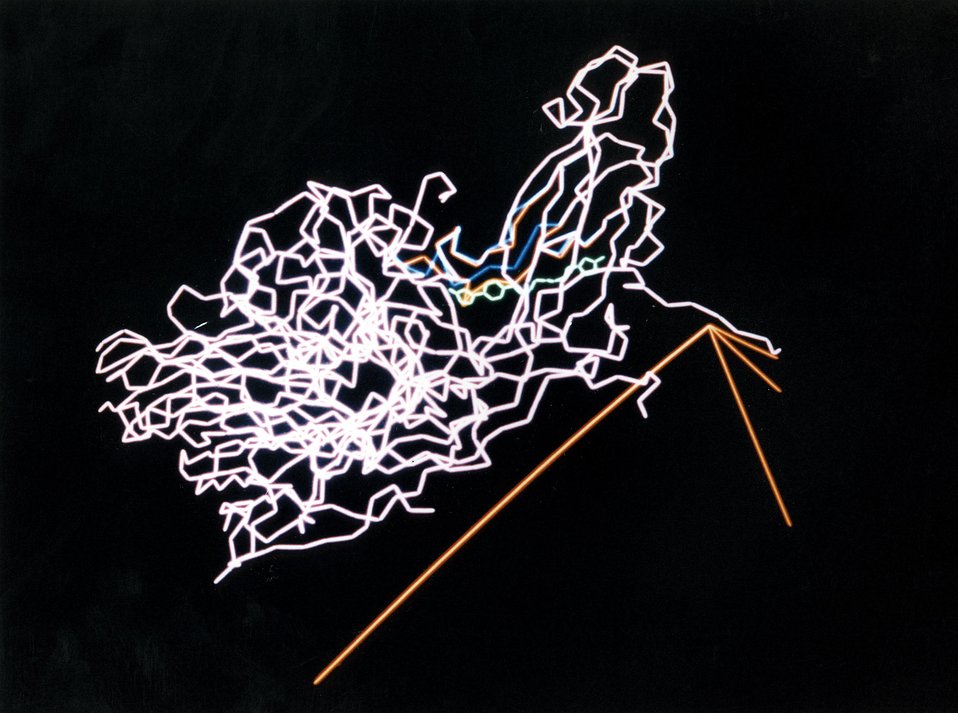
Attacking the Common Cold. A compound with demonstrated antiviral properties is shown here bound within a cleft at the canyon floor, thus inducing a structural change in the virus itself. This structural shift, from blue to red in this computer-generated image, inhibits viral uncoating a necessary step if the virus is to inject its contents into the host cell.